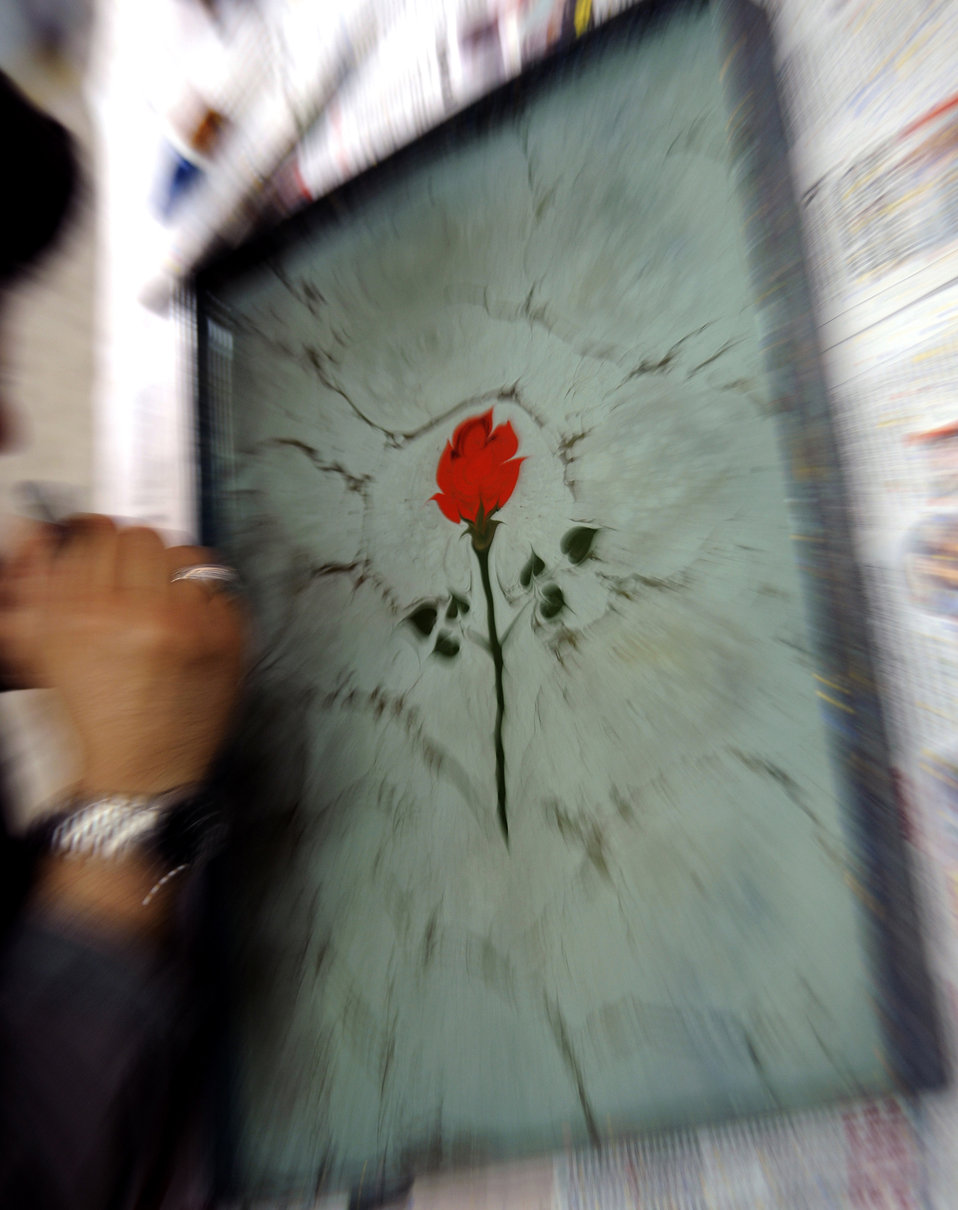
Learning Turkish art

Mesut Dikel, an Ebru art instructor, demonstrates how to create a flora design during a class June 24 at the Arts and Crafts Center at Incirlik Air Base, Turkey. Mr. Dikel has been creating Ebru art, a unique Turkish art form, for nearly 24 years. Ebru, or paper marbling, has been practiced in Turkey since the 15th century and uses all-natural products, from the brushes to the paints.